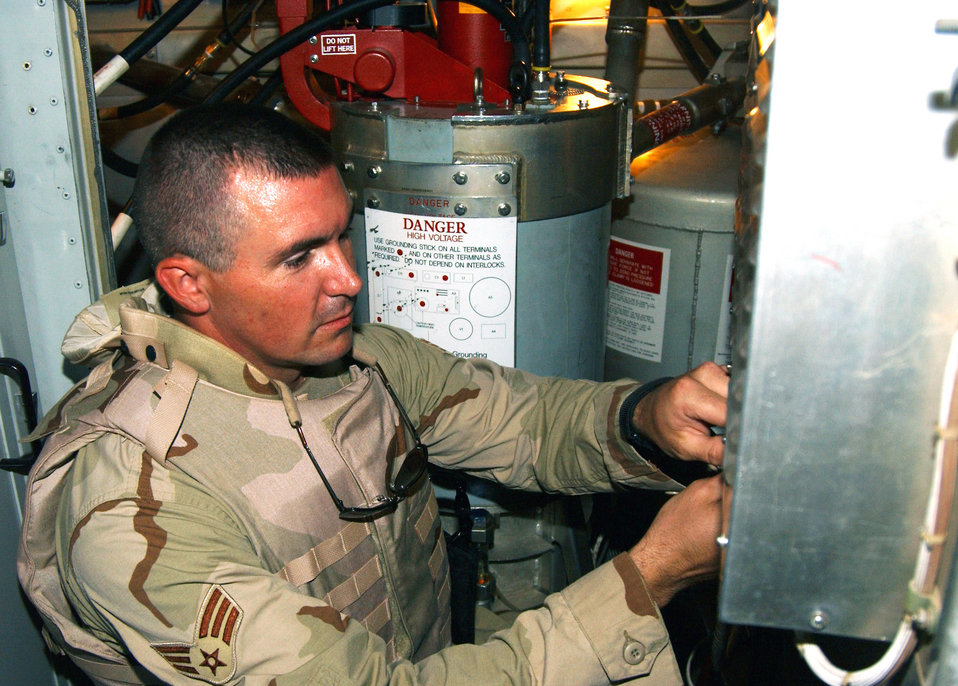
Maintainers keep Balad radar running 'round the clock

Senior Airman Jeremy Poole inspects and installs a new wire during a preventive maintenance of the TPS-75 air control and warning radar at Balad Air Base, Iraq. Airman Poole, a 727th Expeditionary Air Control Squadron radar maintenance technician, is deployed from Hill AFB, Utah.